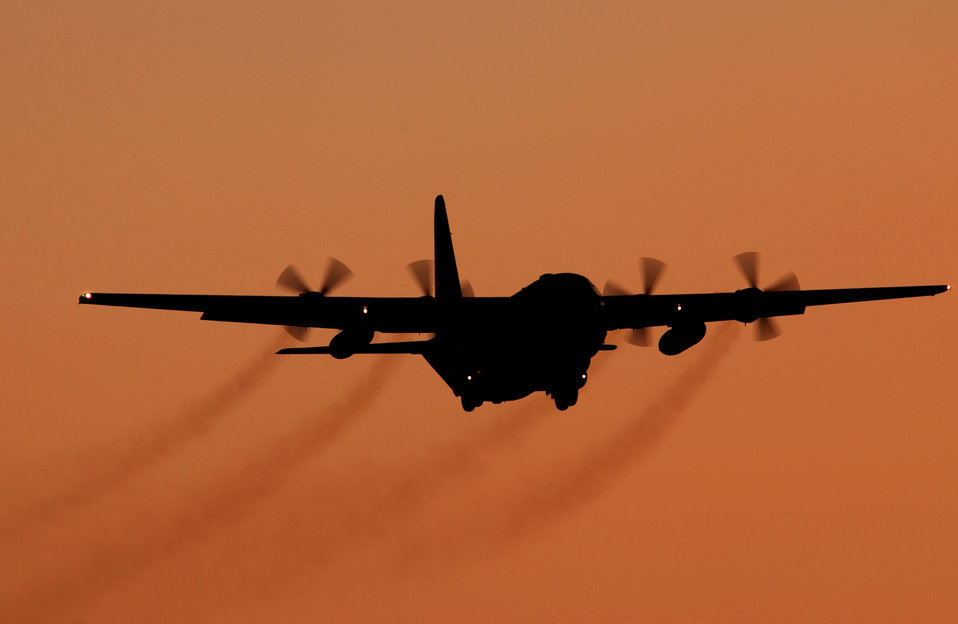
Hercules on the horizon

RAMSTEIN AIR BASE, Germany -- A C-130 Hercules comes in for a landing here July 27.